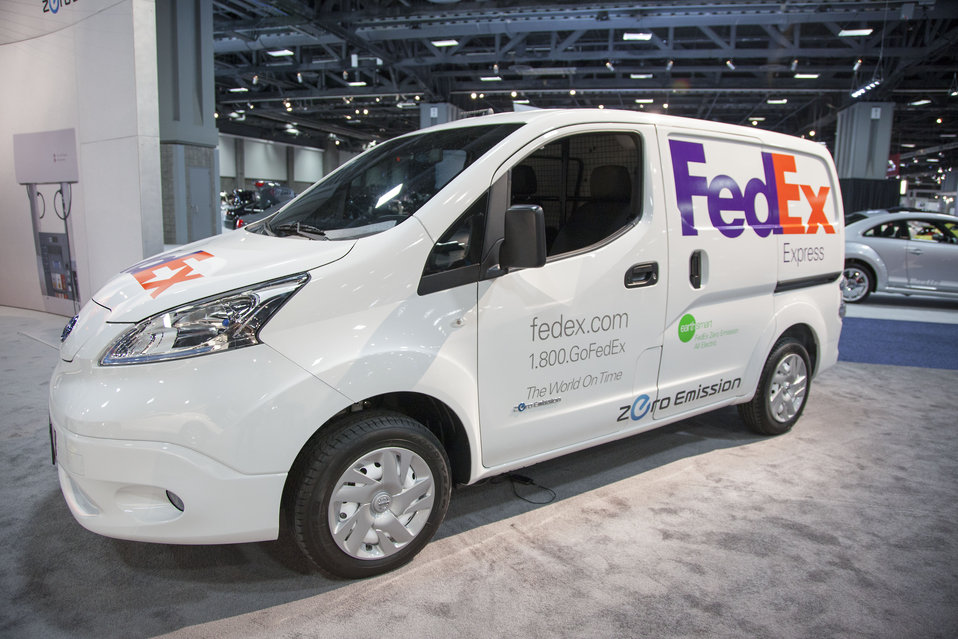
Nissan and FedEx Express announced at the Washington Auto Show that the two companies will partner to test the Nissan e-NV200 -- an all-electric compact cargo vehicle -- in real-world conditions in the Washington, D.C. area.